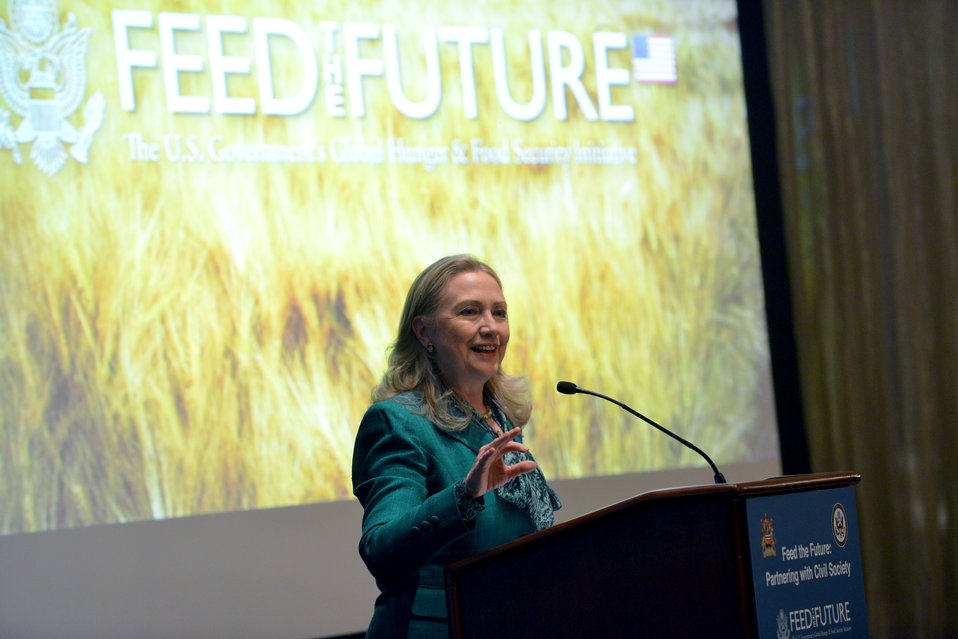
Secretary Clinton Delivers Remarks at an Event for Feed the Future: Partnering with Civil Society

U.S. Secretary of State Hillary Rodham Clinton delivers remarks at an event for Feed the Future: Partnering with Civil Society in New York, New York on September 27, 2012.